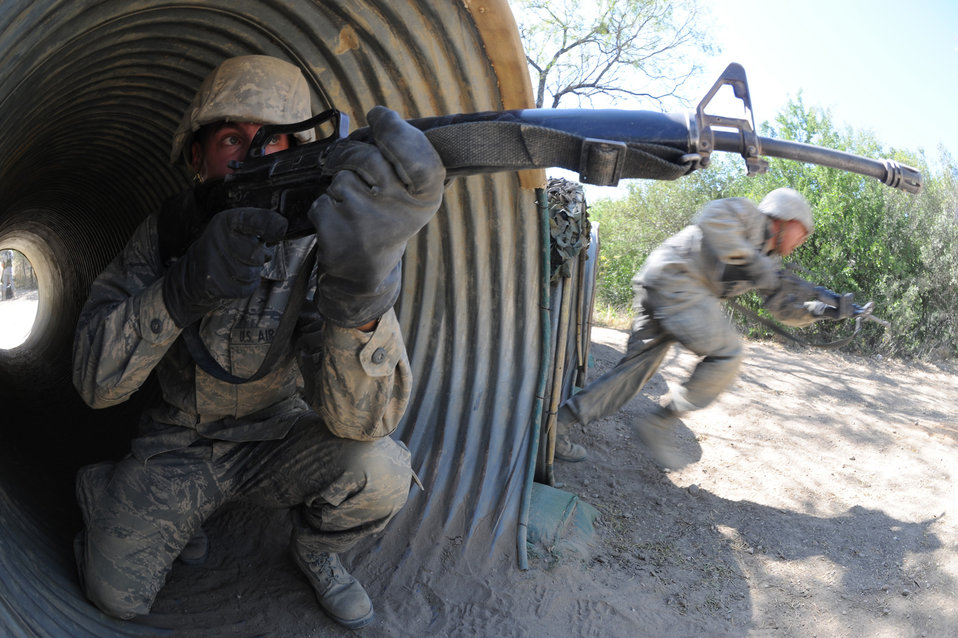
Air Force officials begin extended Basic Military Training

A basic trainee provides defensive cover during the tactical assault course Oct. 29 at Lackland Air Force Base, Texas. The tactical assault course tests their defensive tactics and communication skills.